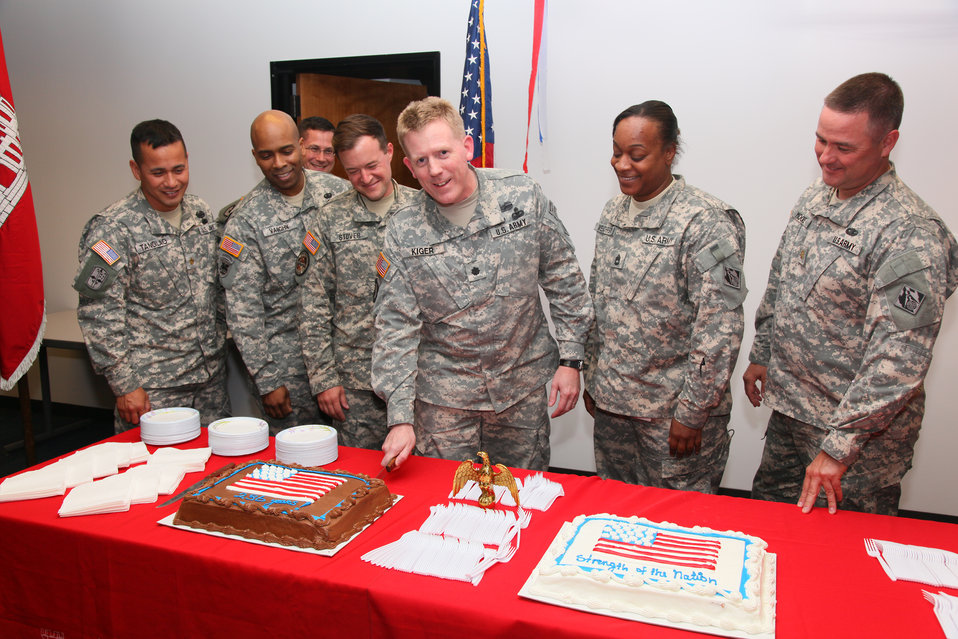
Sacramento District celebrates Army's 236th birthday

U.S. Army Corps of Engineers Sacramento District deputy commander, Lt. Col. Andy Kiger (center), cuts the cake during the district’s celebration of the U.S. Army’s 236th birthday in Sacramento, Calif., June 14, 2011. Joining Kiger from the Sacramento District, from left: Maj. Dominic Tanglao, Maj. Gerald Vaughn, Lt. Col. William Campbell, Maj. Jonathan Stover, Sgt. 1st Class Samantha Weatherspoon and Maj. Scott Moore.